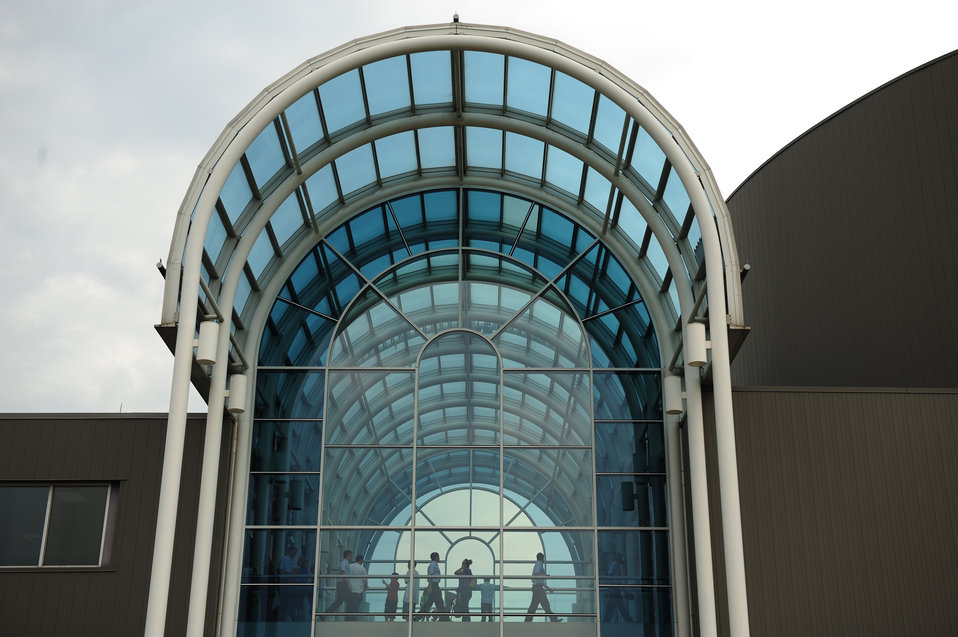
68th Doolittle Raiders Reunion

Visitors walk along the skywalk at the National Museum of the U.S. Air Force at Wright Patterson Air Force Base, Ohio, April 16, 2010. The museum is hosting the Doolittle Raiders' 68th reunion at Wright Patterson Air Force Base, Ohio. The event commemorates the anniversary of the Doolittle Tokyo Raid. On April 18, 1942, U.S. Army Air Forces Lt. Col. Jimmy Doolittle's squadron of 16 B-25s bombed targets over Japan in response to the Japanese attack on Pearl Harbor.